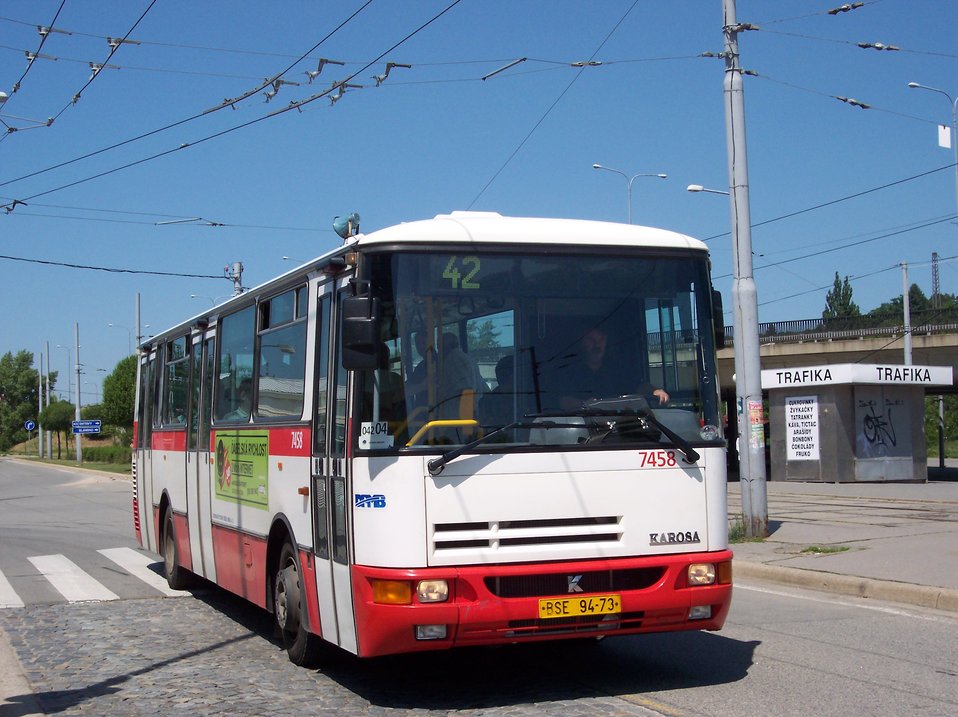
Čeština: Autobus linky 42 v Králově poli nádraží